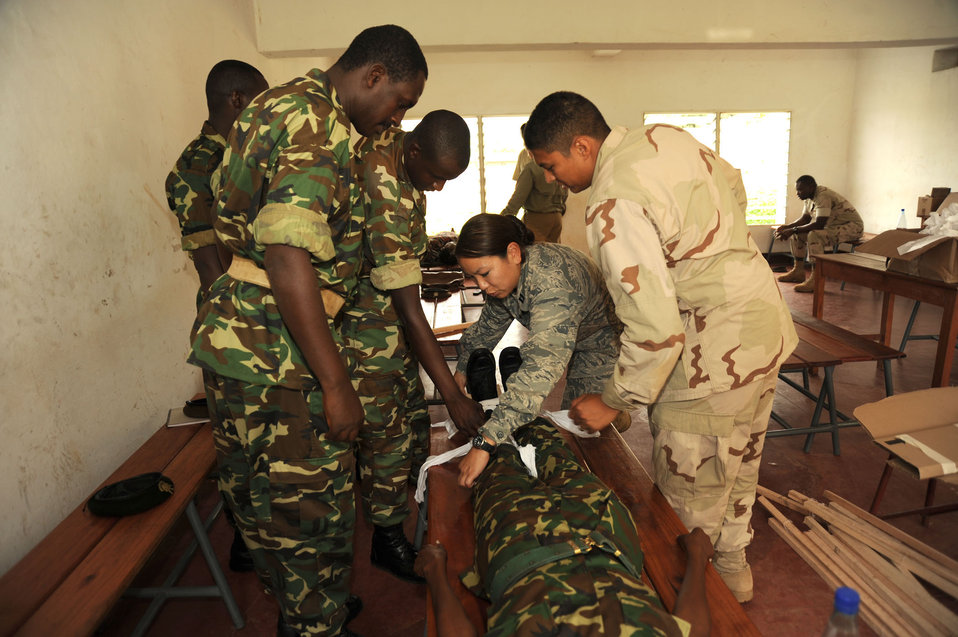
Spreading the love of language

Capt. Sylvia Kim demonstrates how to splint a broken leg to members of the Burundian National Defense Force during a Tactical Combat Casualty Care course Nov. 8, 2010, in Burundi, Africa. Captain Kim is fluent in French, an official language for Burundians, making it easier to communicate with the class.